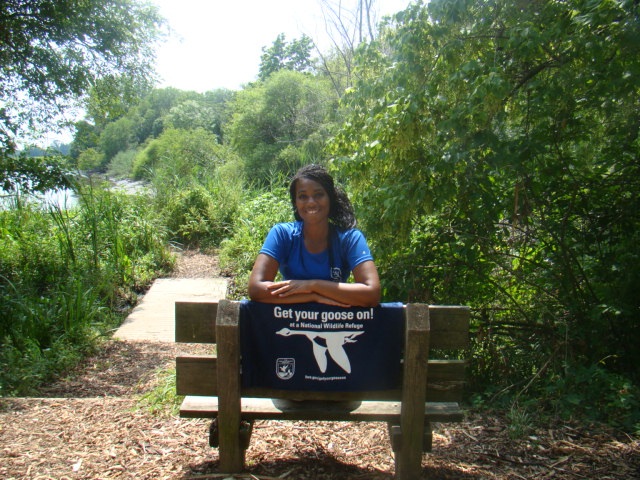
Get Your Goose On!

USFWS Intern Shanita Brown Getting Her Goose On at John Heinz NWR.